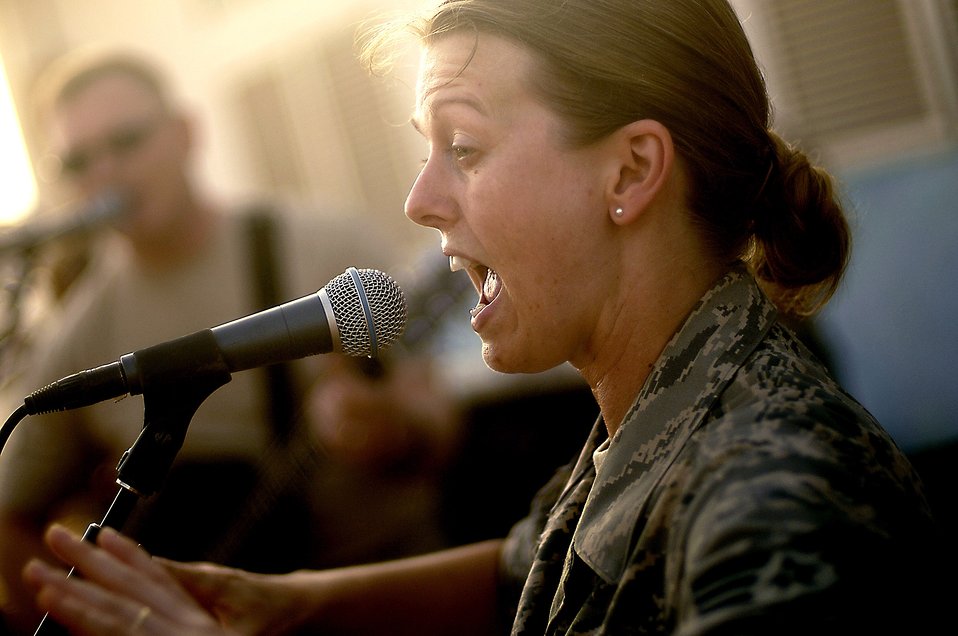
U.S. Air Force Band Concert, Djibouti

Staff Sgt. Krista Joyce performs for villagers May 22 in Negad, Djibouti. The band is deployed to support Combined Joint Task Force - Horn of Africa out of Camp Lemonier, Djibouti. Sergeant Joyce is a vocalist with the U.S. Air Force Central Command band, Falcon.